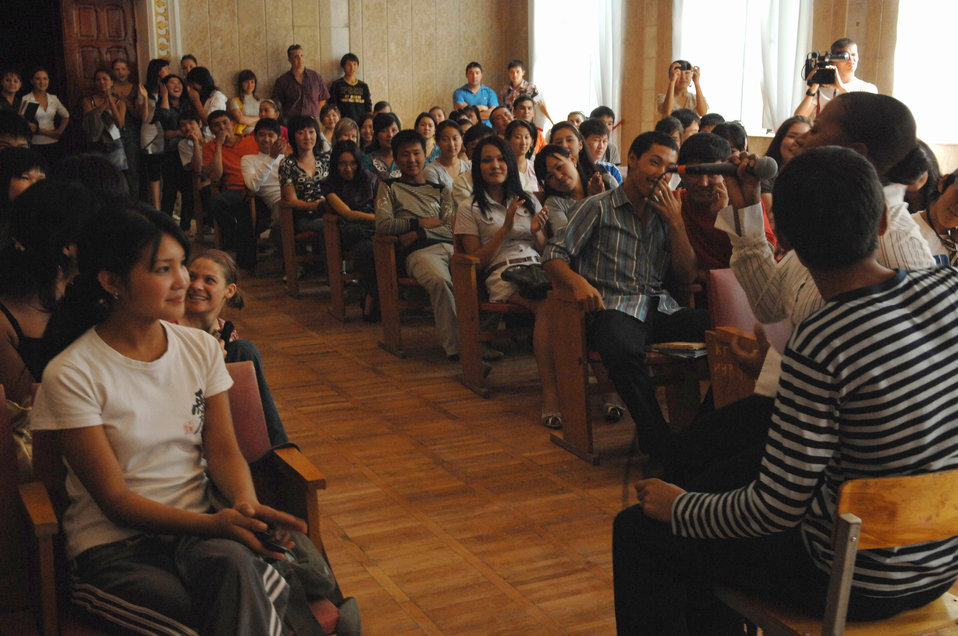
Band members, Kyrgyz citizens share culture through music

Master Sgt. Regina Coonrod performs a duet with a Kyrgyz boy in front of nearly 200 students Sept. 10 at the Bishkek Musical College in Krygyzstan. During their eight-day tour at Manas, the U.S. Air Forces Central Band Yuma performed 10 concerts at local schools, villages and orphanages, as well as on base for coalition servicemembers.